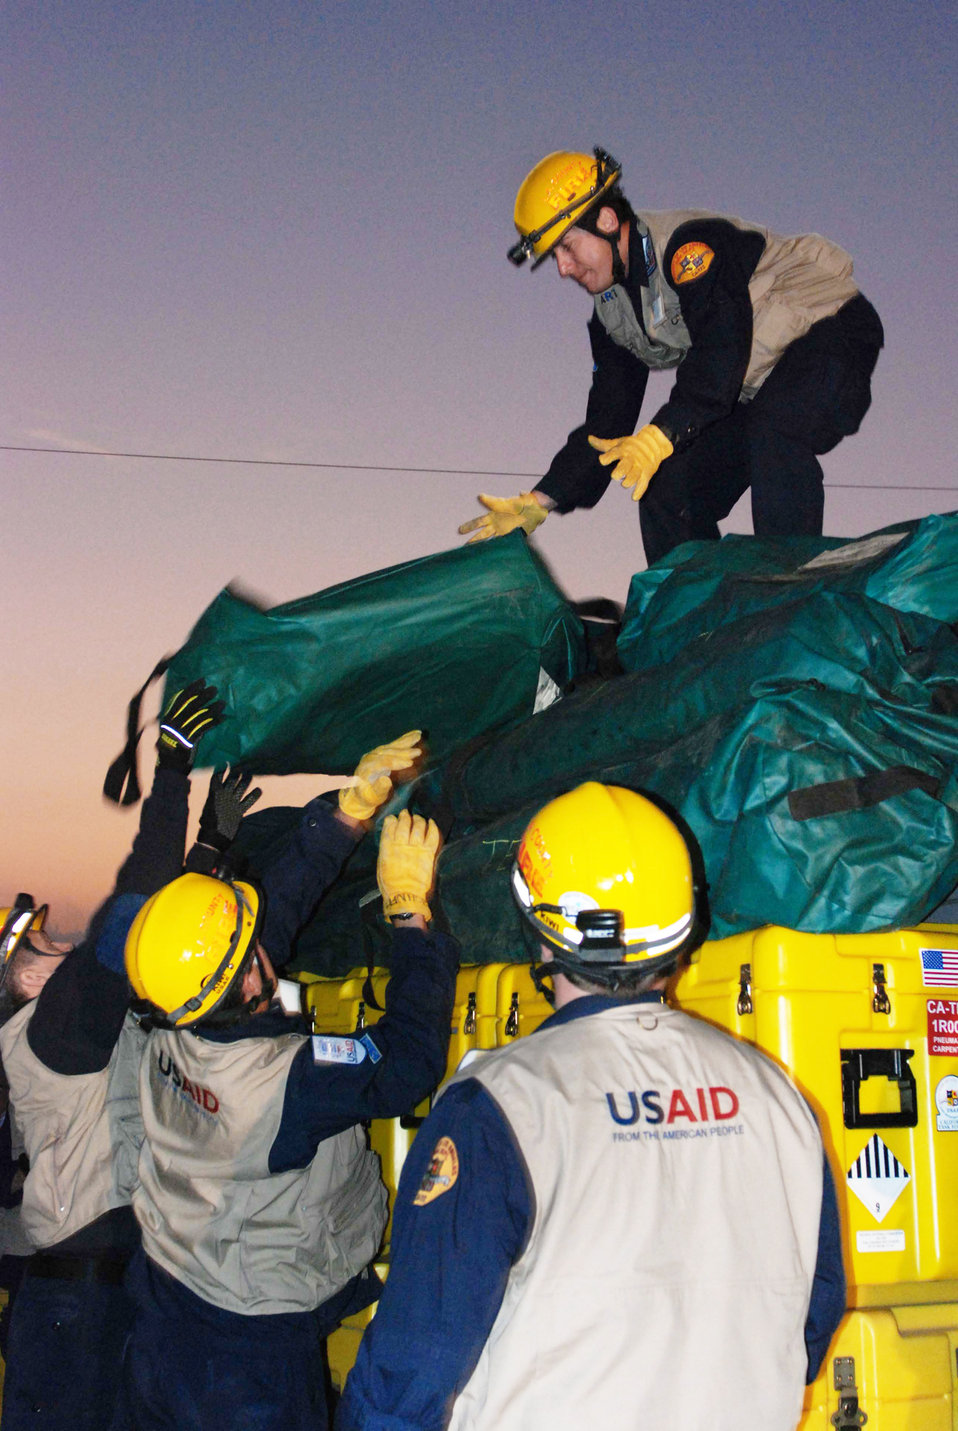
March officials assist with Haiti earthquake relief efforts

Members of a U.S. Agency for International Development search and rescue team build a pallet for transport on a C-17 Globemaster III Jan. 13, 2010, at March Air Reserve Base, Calif. The USAID personnel are members of the Los Angeles County Fire Department. The C-17 Globemaster III that transported the 72-person team and rescue equipment was from Travis Air Force Base, Calif.